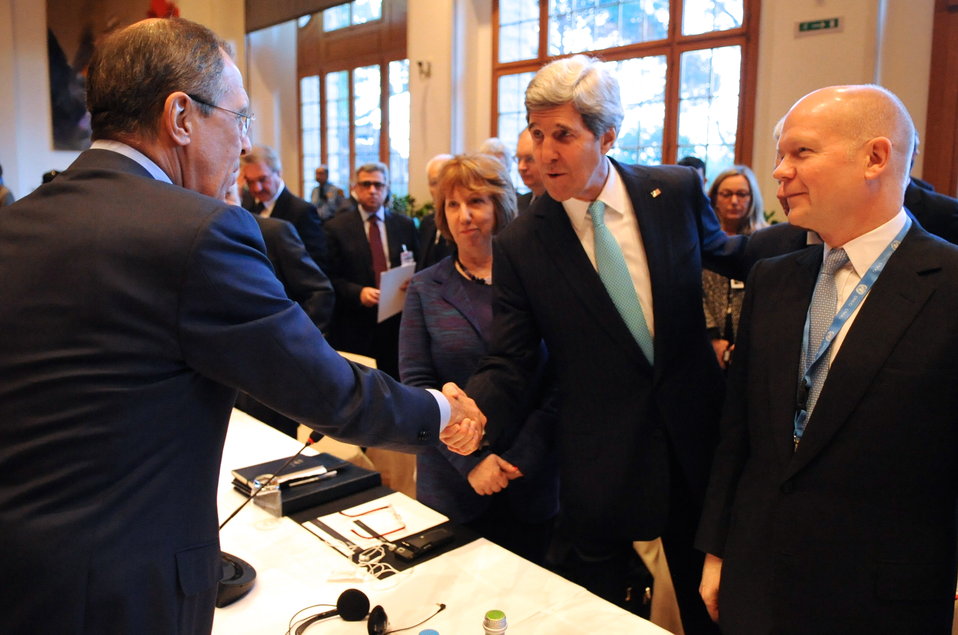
Secretary Kerry Shakes Hands Wtih Russian Foreign Minister Lavrov Before Start of Geneva II Conference

U.S. Secretary of State John Kerry shakes hands with Russian Foreign Minister Sergey Lavrov while chatting with European Union High Representative Lady Catherine Ashton and British Foreign Secretary William Hague at the outset of the Geneva II conference in Montreux, Switzerland, on January 22, 2014.